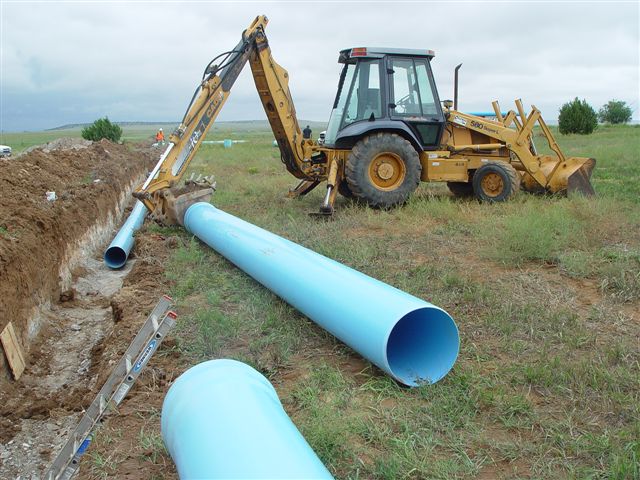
Las Vegas 3

Workers and tractors from Deerfield Corp. of Albuquerque, N.M. carefully place new PVC pipes in an area where a water delivery and pipeline system is being rehabilitated at Las Vegas NWR in Las Vegas, N.M. The work is part of a Recovery Act project for the refuge.